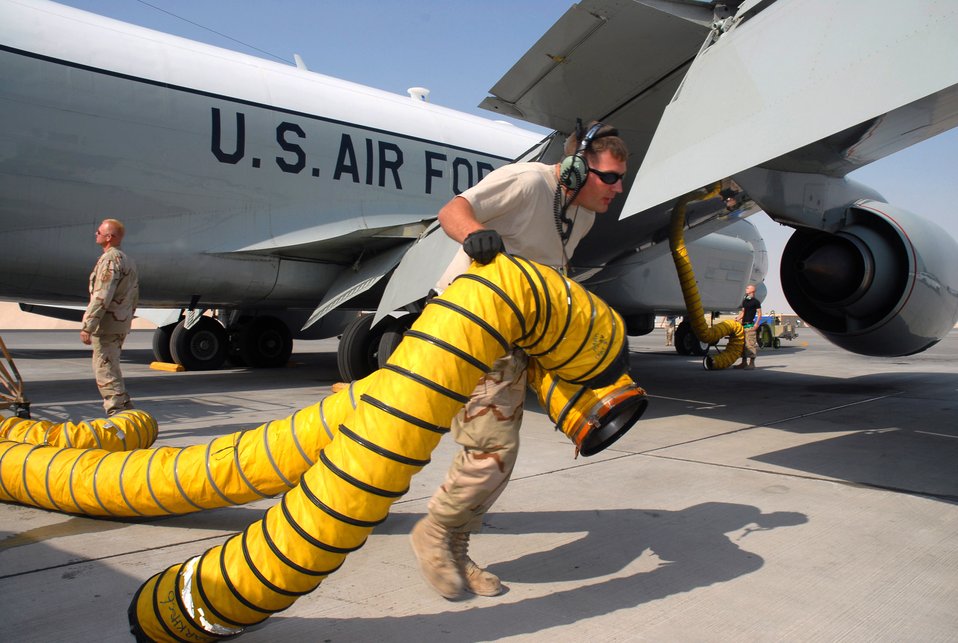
Getting ready to launch

Staff Sgt. Kelly Dejong, a maintainer from the 379th Expeditionary Aircraft Maintenance Squadron at an air base in Southwest Asia, drags air conditioning ducting from a RC-135 aircraft Dec. 4 as he helps ready it for take off.